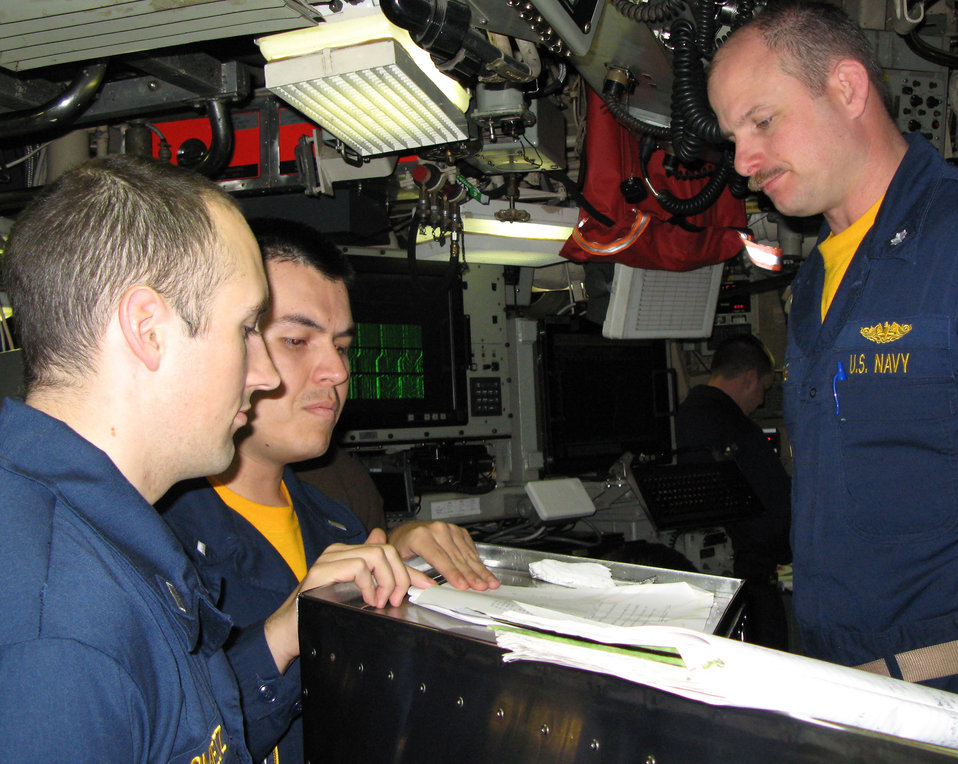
Trident submariners provide strategic deterrence

Navy Lt. j.g. Jeremy Smeltz (from left) and Lt. j.g. Juan Torres report to Cmdr. Jeffrey M. Grimes, the captain of the strategic missile submarine USS Maryland, during a battle drill Feb. 16.